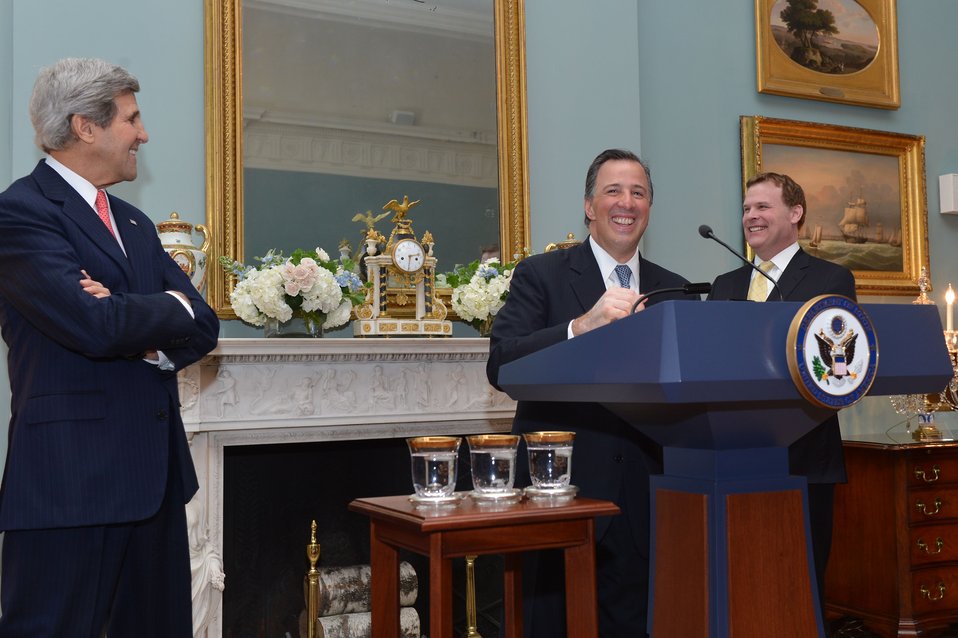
Mexican Foreign Minister Jose Antonio Meade Speaks at the North American Trilateral Ministerial

Flanked by U.S. Secretary of State John Kerry, left, and Canadian Foreign Minister John Baird, right, Mexican Foreign Secretary Jose Antonio Meade delivers remarks during the North American Trilateral Ministerial at the U.S. Department of State in Washington, D.C., on January 17, 2014.